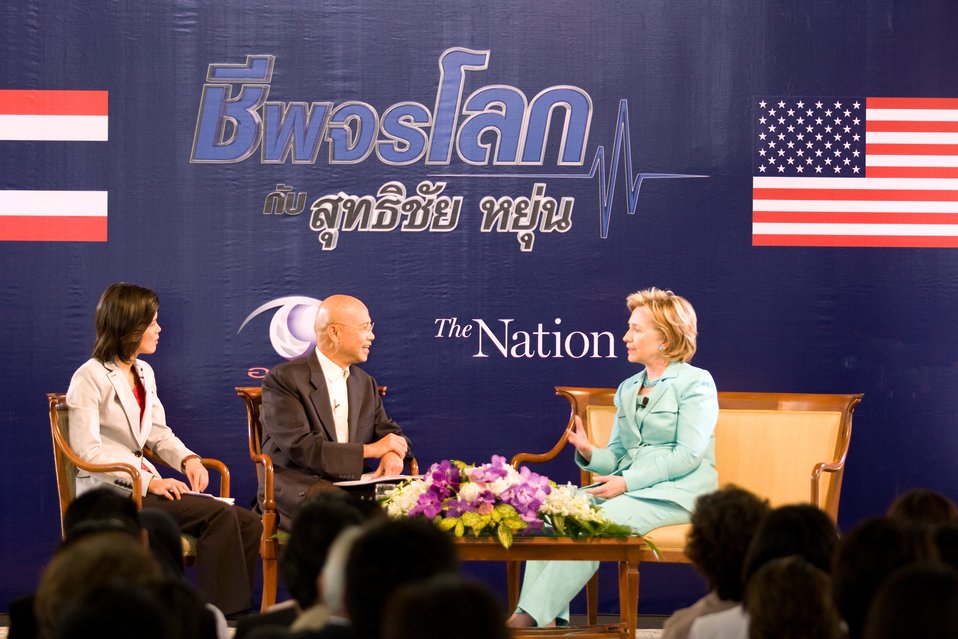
Secretary Clinton Interviews With the Nation Group

U.S. Secretary of State Hillary Rodham Clinton during an interview by Suthichai Yoon and Veenarat Laohapakakul at Phyathai Palace in Bangkok, Thailand July 22, 2009.